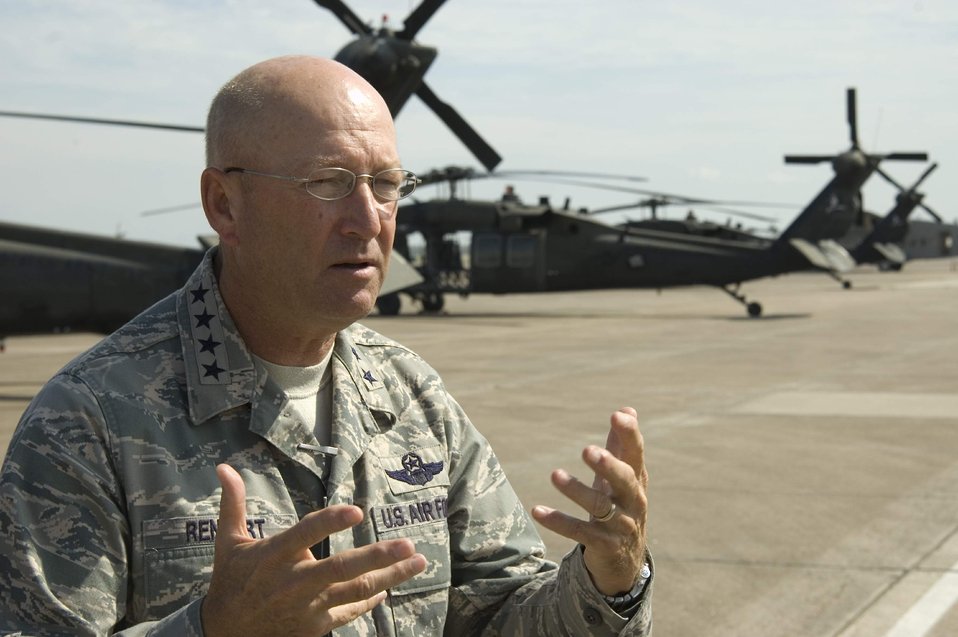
Northern Command commander surveys damage from Ike

Gen. Victor E. Renuart Jr. describes areas affected by Hurricane Ike after a survey of damaged areas along the Gulf Coast from a UH-60 Pave Hawk Sept. 15 at Ellington Field, Texas. General Renuart is the commander of U.S. Northern Command.